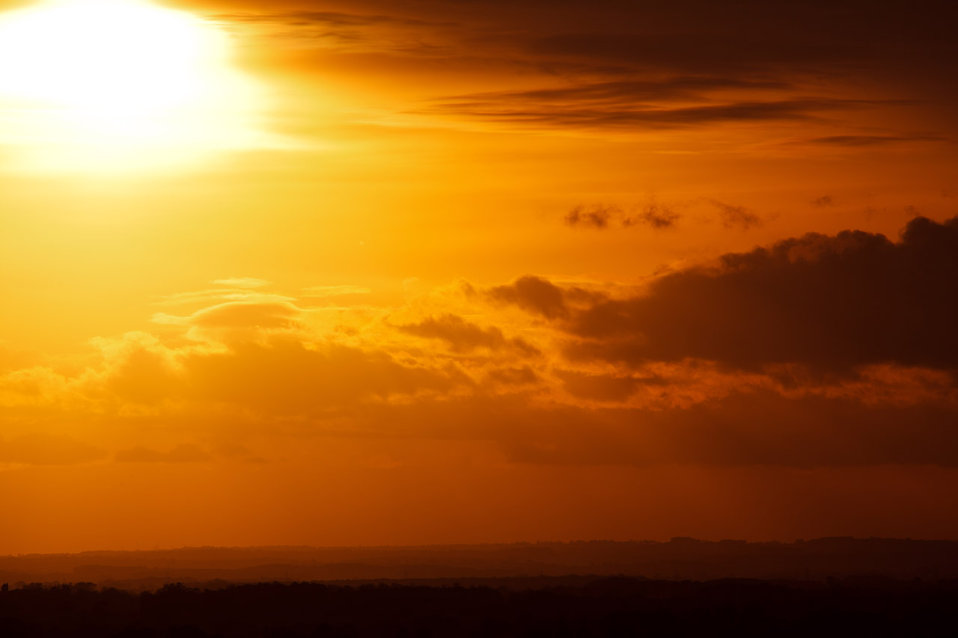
Sunset and clouds

Beautiful sunset with clouds above countryside landscape.